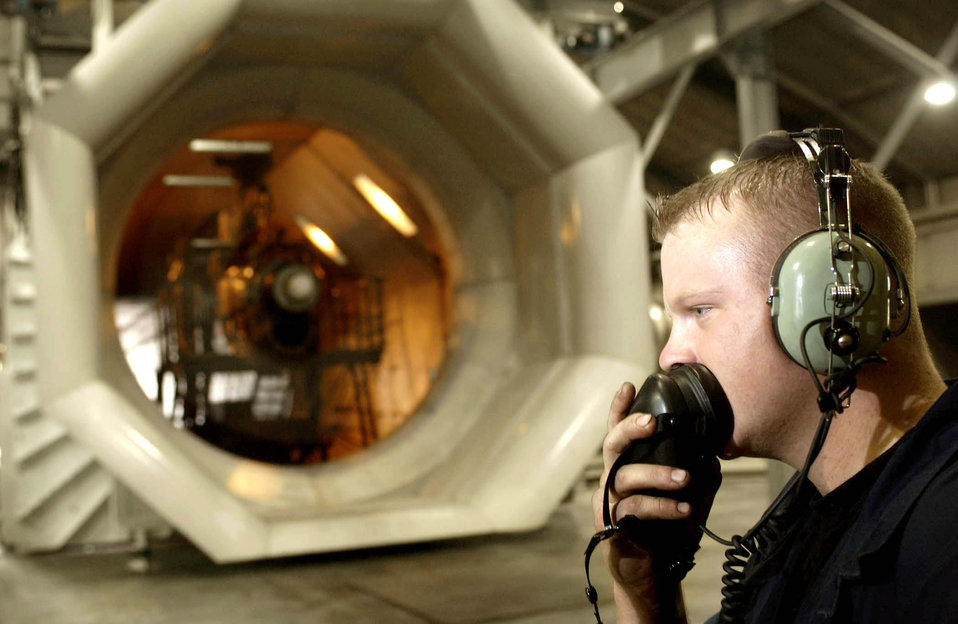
Hush, hush

RAMSTEIN AIR BASE, Germany -- Staff Sgt. David Stabbins works in the hush house here. The hush house was originally made for conducting engine tests for the F-16 Fighting Falcon. It is now used for C-130 Hercules engine repair. The 86th Maintenance Squadron's propulsion flight is a centralized intermediate repair facility making it the focal point for any C-130 engines needing repairs in Europe or for operations Iraqi Freedom and Enduring Freedom.